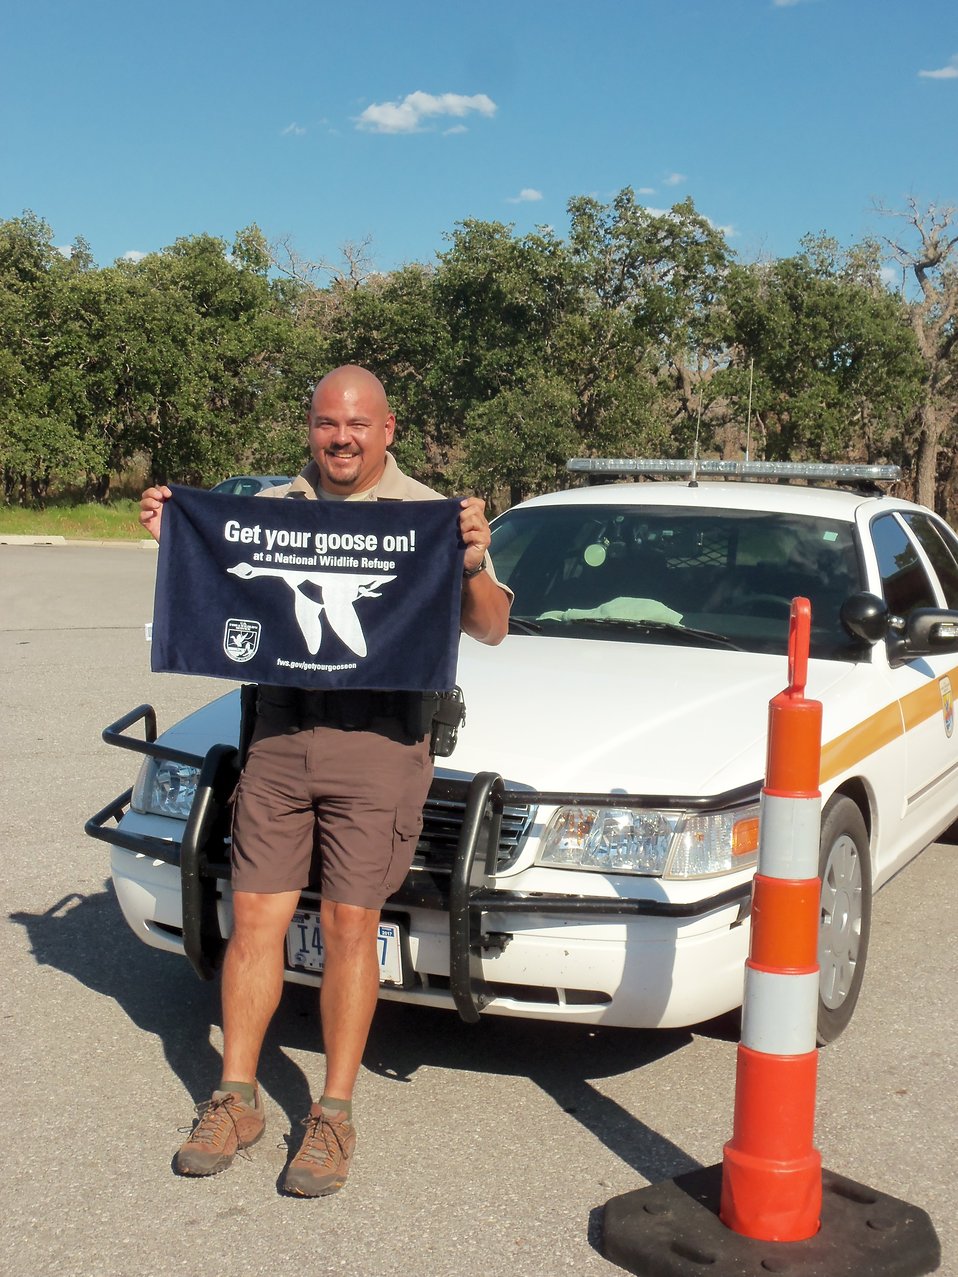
Get Your Goose On!

Wichita Mountains National Wildlife Refuge in Oklahoma.